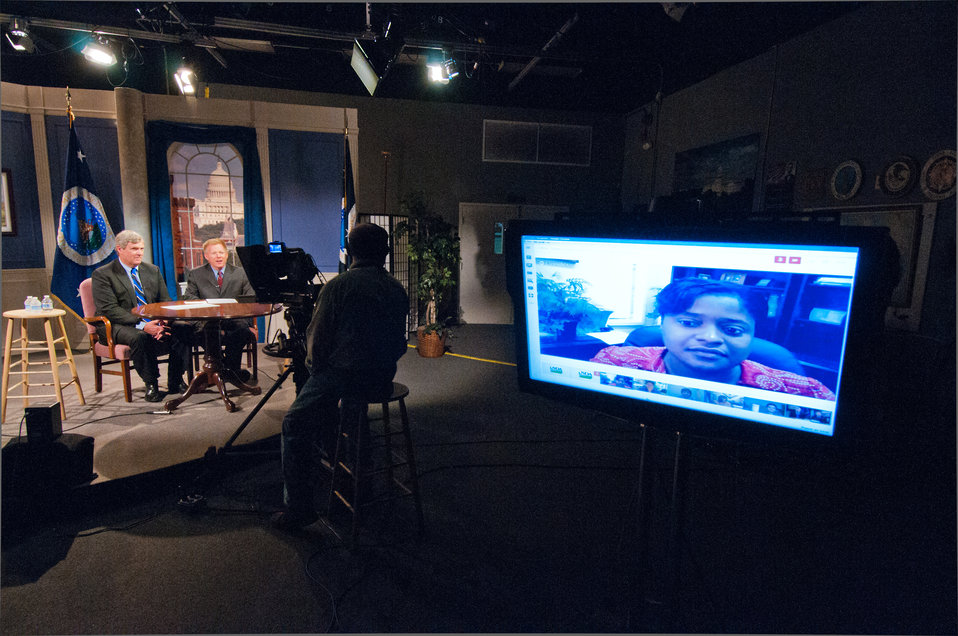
Agriculture Secretary Tom Vilsack takes notes as U.S. Department of Agriculture (USDA) Natural Resources Conservation Service (NRCS) Georgia Assistant State Conservationist for Programs Aquanda Jones discusses USDA StrikeForce Initiative opportunities, success stories and ways communities can get involved during a Google Hangout at USDA in Washington, D.C. on Monday, Jun. 17, 2013. A panel of StrikeForce State coordinators joined Secretary Vilsack and Jones, partners and program recipients who will address frequently asked questions and provide guidance on how to be a part of the Initiative.